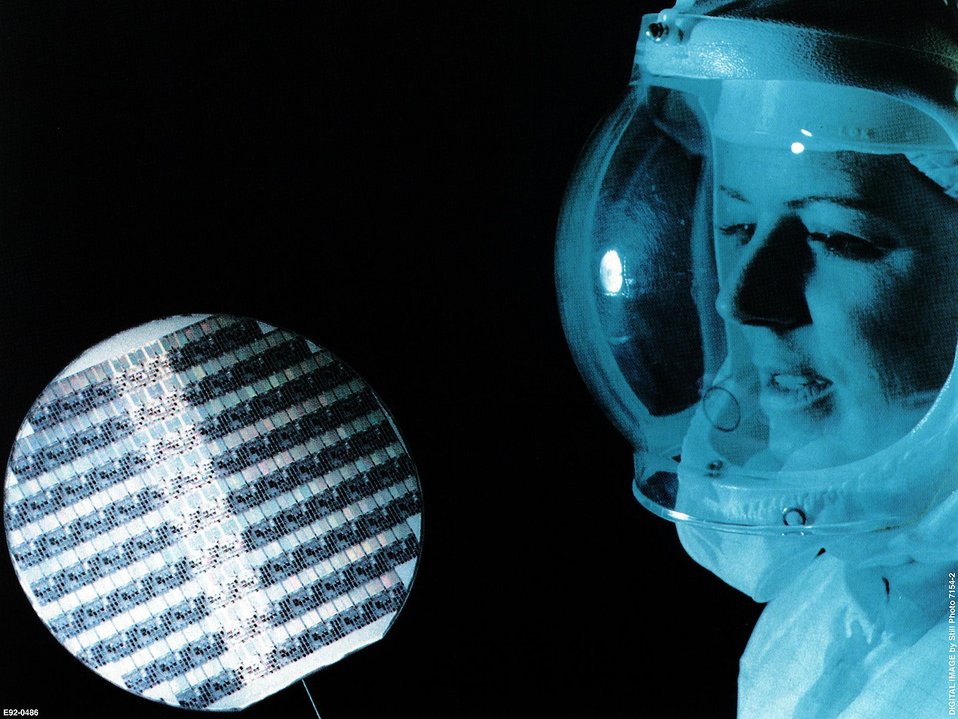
SANDIA SCIENTIST IN PROTECTIVE GEAR EXAMINES MICROELECTRONICS CHIP.

THE PRIMARY MISSION OF MICROELECTRONICS IS TO DEVELOP METHODS FOR FABRICATING CIRCUITS THAT ARE IMMUNE TO LARGE RADIATION DOSES. SANDIA'S INTEGRATED CIRCUITS ARE OPERATING BENEATH THE OCEANS, IN EARTH ORBIT, AND IN THE FAR REGIONS OF OUR SOLAR SYSTEM. MODERN INTEGRATED CIRCUITS CONTAINING MILLIONS OF TRANSISTORS WITH FEATURES AS SMALL AS A VIRUS, HAVE VARIED APPLICATIONS RANGING FROM HIGH SPEED COMPUTERS TO MICROCIRCUITS THAT SCAN THE ATMOSPHERE FOR TOXIC GASES.